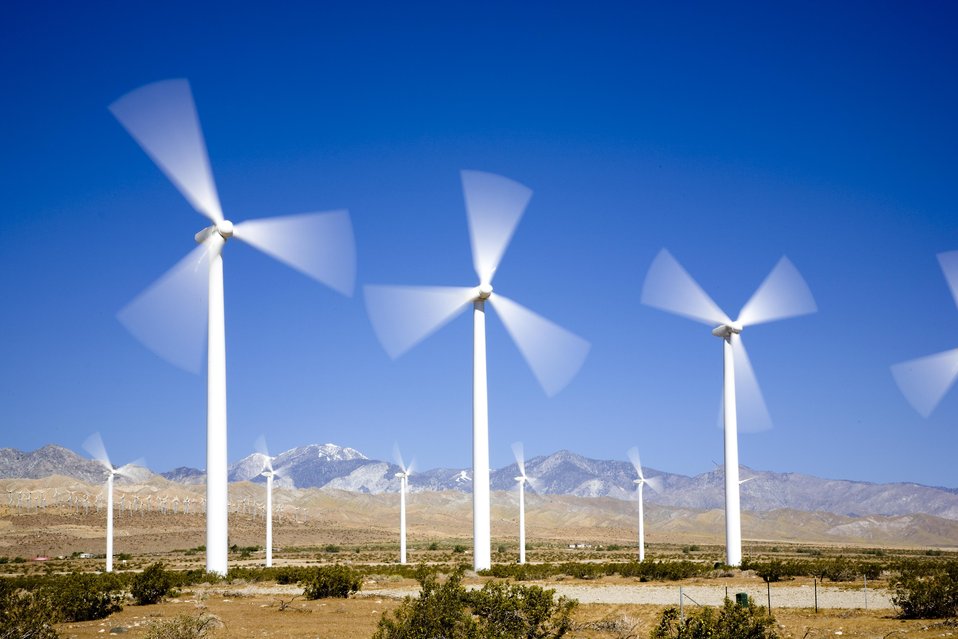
Dillion wind power project